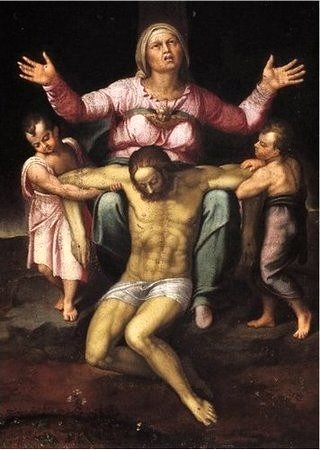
'La Pieta', possibly by Michelangelo 1545